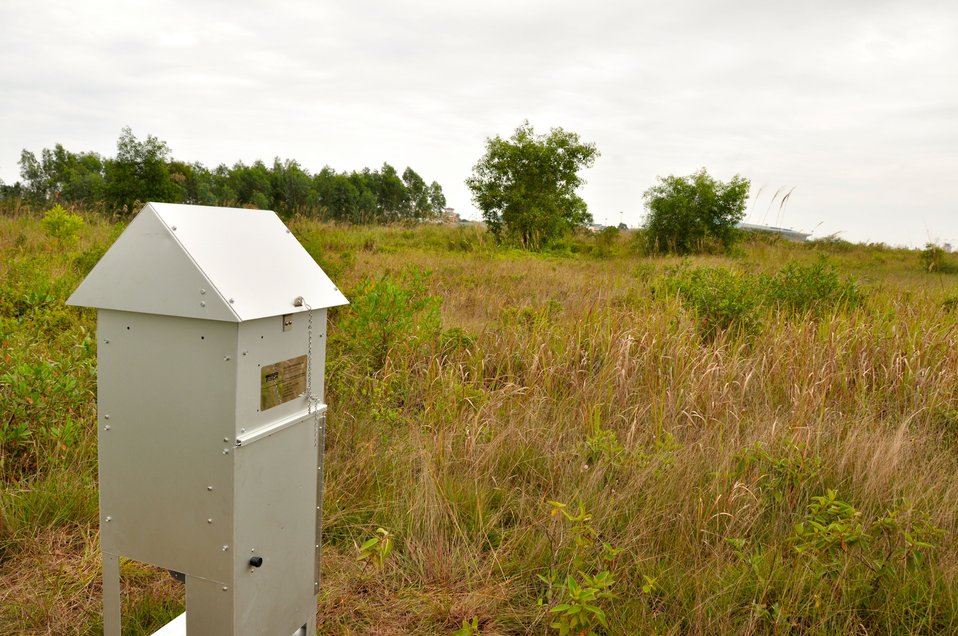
Site Preparation for Environmental Remediation of Dioxin Contamination at Danang Airport

Danang Airport, January 22, 2013